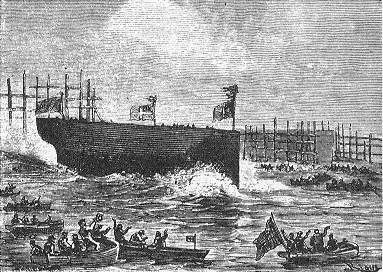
An illustration from Jules Verne's novel 'Journeys and Adventures of Captain Hatteras', part I: 'The English at the Noth Pole' drawn by Édouard Riou and/or Henri de Montaut. Polski: Ilustracja powieści Juliusza Verne'a 'Podróże i przygody kapitana Hatterasa', części I: 'Anglicy na Biegunie Północnym' autorstwa Édouarda Riou i/lub Henri de Montauta. Français : Jules Verne: 'Voyages et aventures du capitaine Hatteras - Les Anglais au Pôle Nord', Édouard Riou et Henri de Montaut.